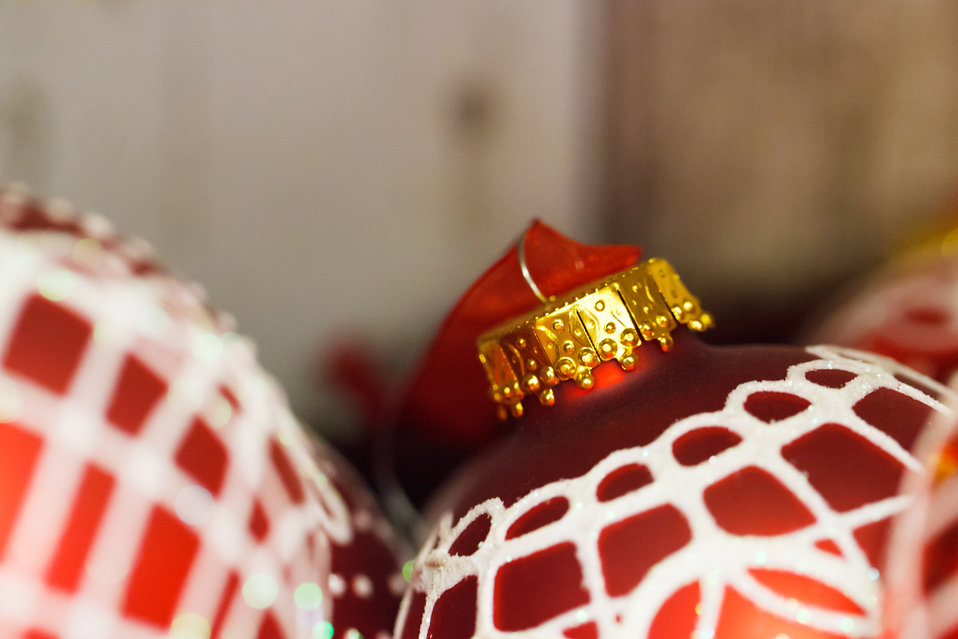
Red christmas balls

Red christmas baubles with wooden background.